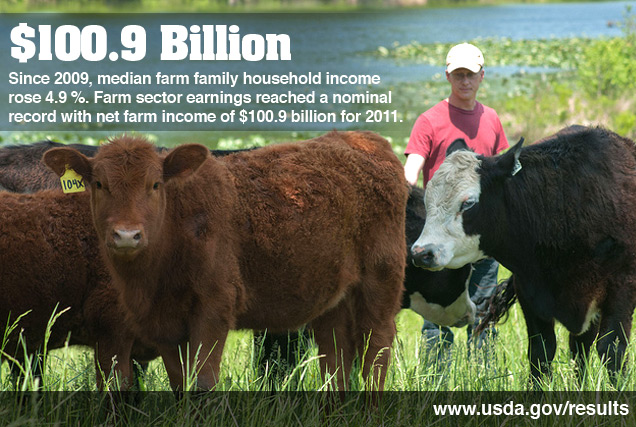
Blog-Ag2

Cattle raised by Bruce Johnson at Dragonfly Farm are free-range, grass-fed, and very stress-free in Beaverdam, VA, on Friday, May 6, 2011, as they spend the day roaming one pasture or another and resting under shade trees. Sequential use of pastures allows the grass and land to re-grow and recover. Dragonfly and other farms produce meat products listed and ordered on Lulus Local Food website and distributed by Fall Line Farms food hub who offer a wide variety of household food staples and specialty items. Members pick their customized orders from an ever changing inventory of fruits, vegetables, meats, soaps, eggs, cheeses, flowers, honey, pastas, sauces, syrups, baked goods, mushrooms, flour and grains. Every Thursday, suppliers team up with other suppliers to deliver customized orders to, one of several pick-up points, designated by the customer in or around the Richmond area.